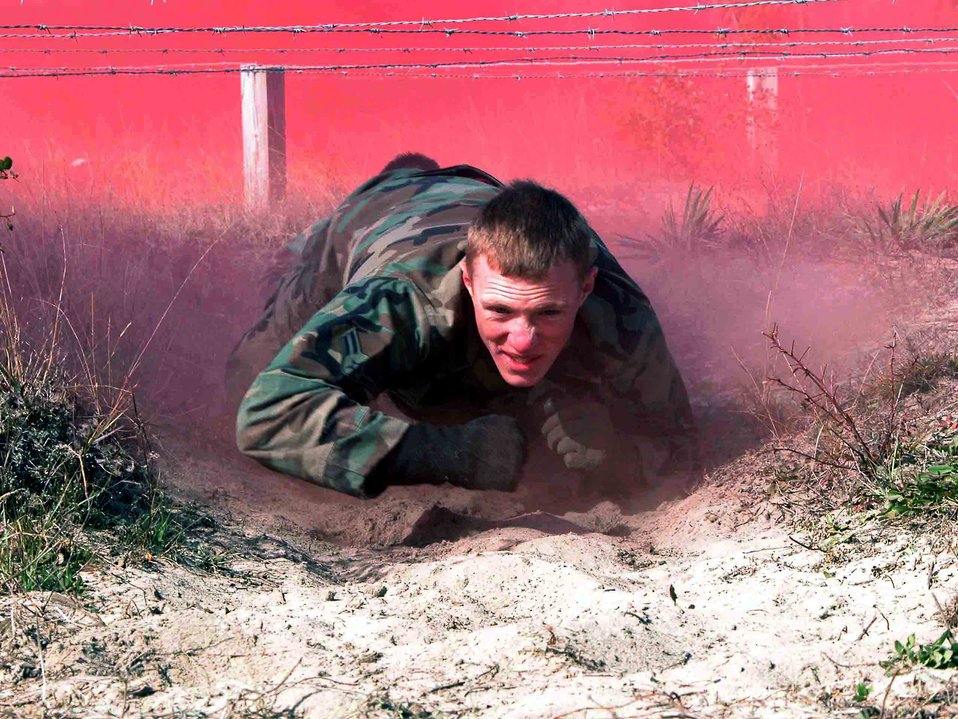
When the smoke clears

EGLIN AIR FORCE BASE, Fla. -- Airman 1st Class James Blum emerges from red smoke on the high crawl obstacle during Brave Defender combat training here recently. During the two-week course, instructors of the 96th Ground Combat Training Squadron here taught 128 Airmen skills they will need when deployed. Airman Blum is from the 75th Security Forces Squadron at Hill Air Force Base, Utah. Other Airmen were from here, Edwards AFB, Calif.; Hanscom AFB, Mass.; Robins AFB, Ga.; and Tinker AFB, Okla.